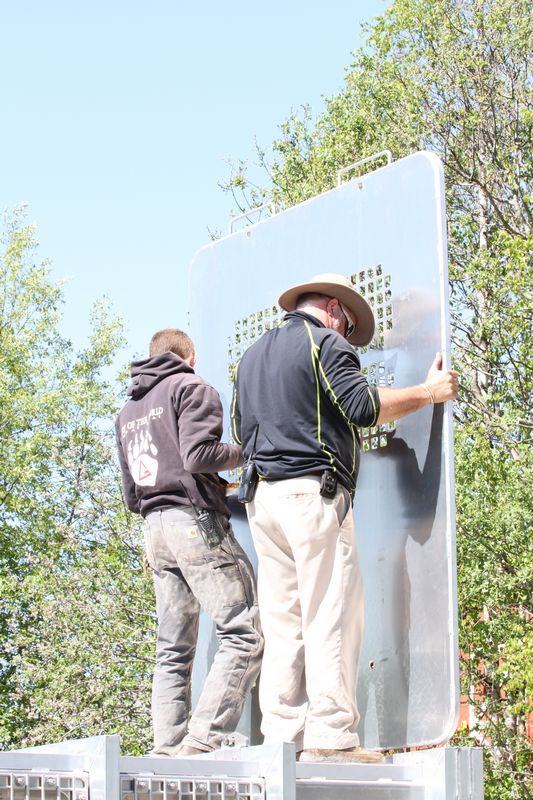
Press Conference on the polar bear holding module. USFWS/Rose Primmer